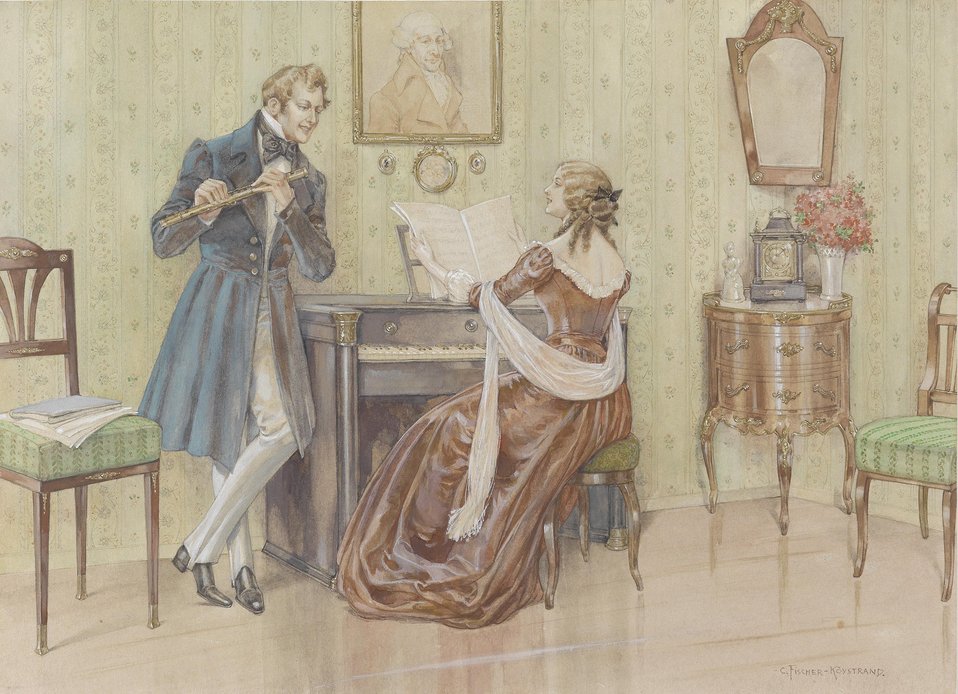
Hausmusik, signiert C. Fischer Köystrand, Aquarell auf Papier, 24 x 34 cm